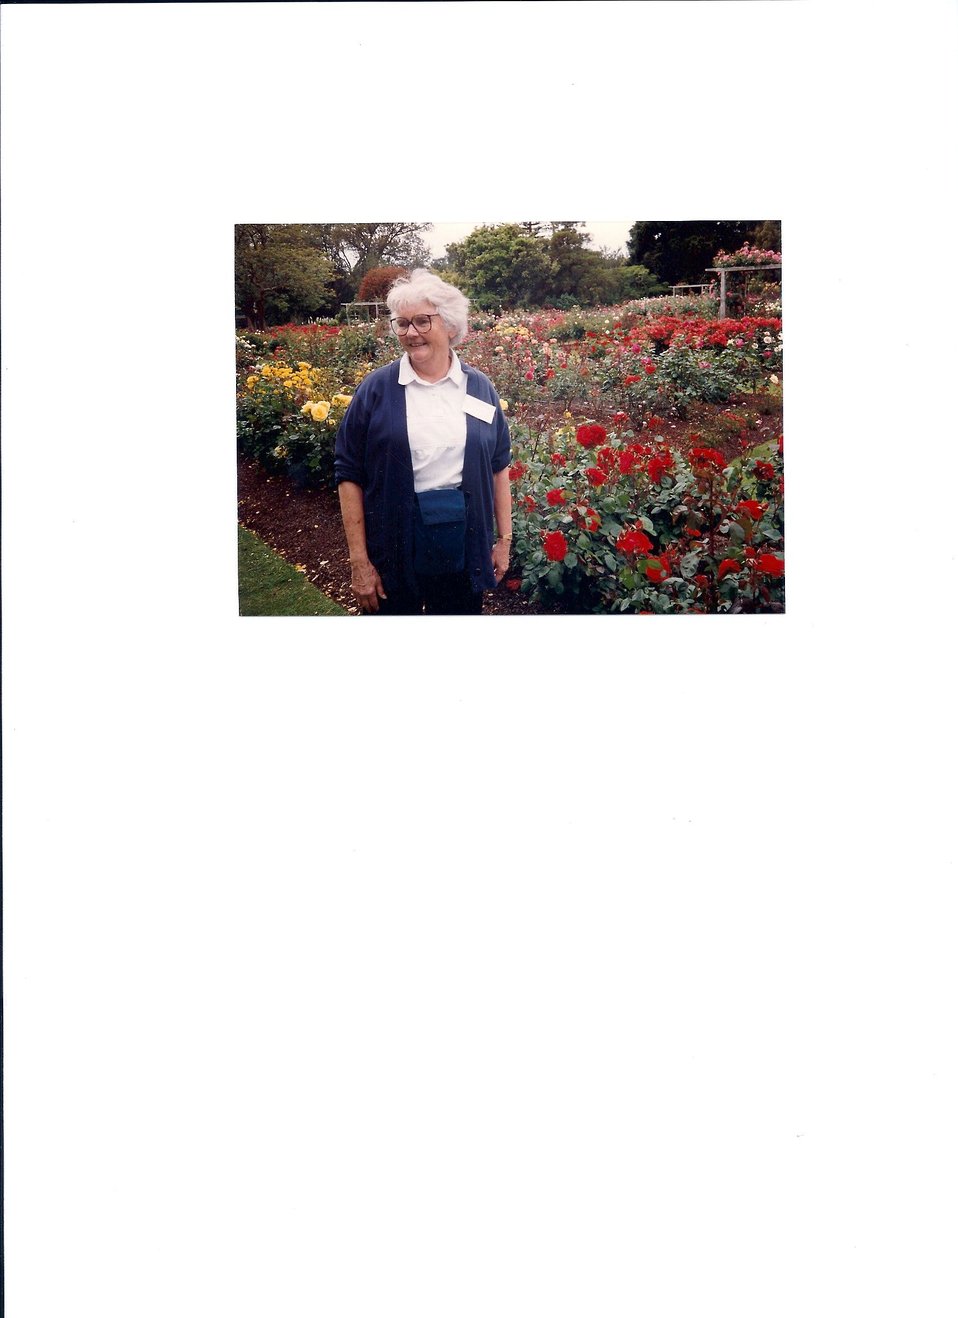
Margaret Griess, 2

Jane Griess's mom, the late Margaret Griess